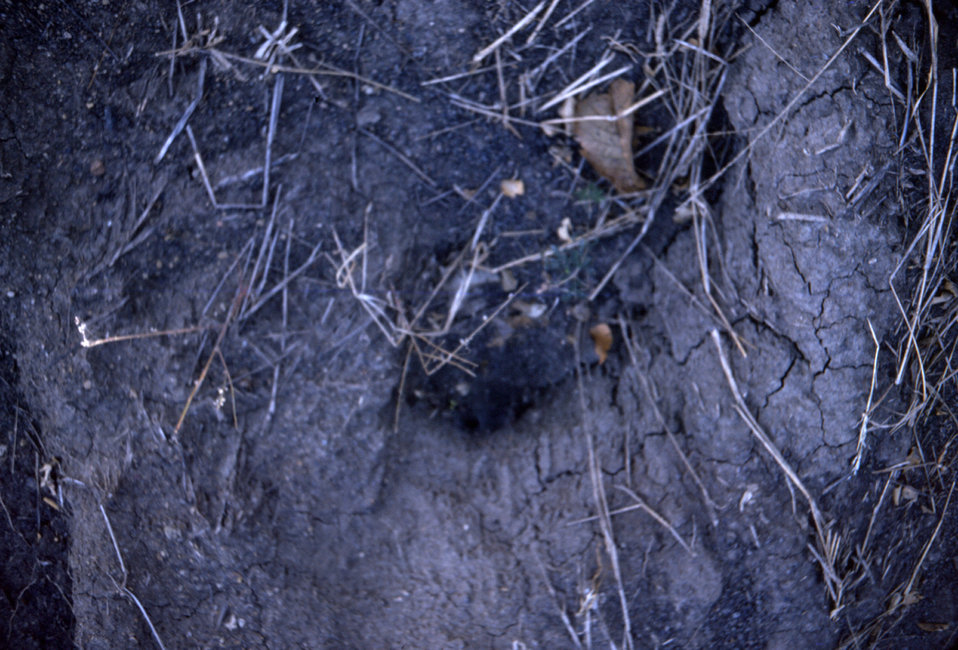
This photograph shows the location of funnel web spiders (possible vectors) during the Marburg investigation in Zimbabwe, 1975.